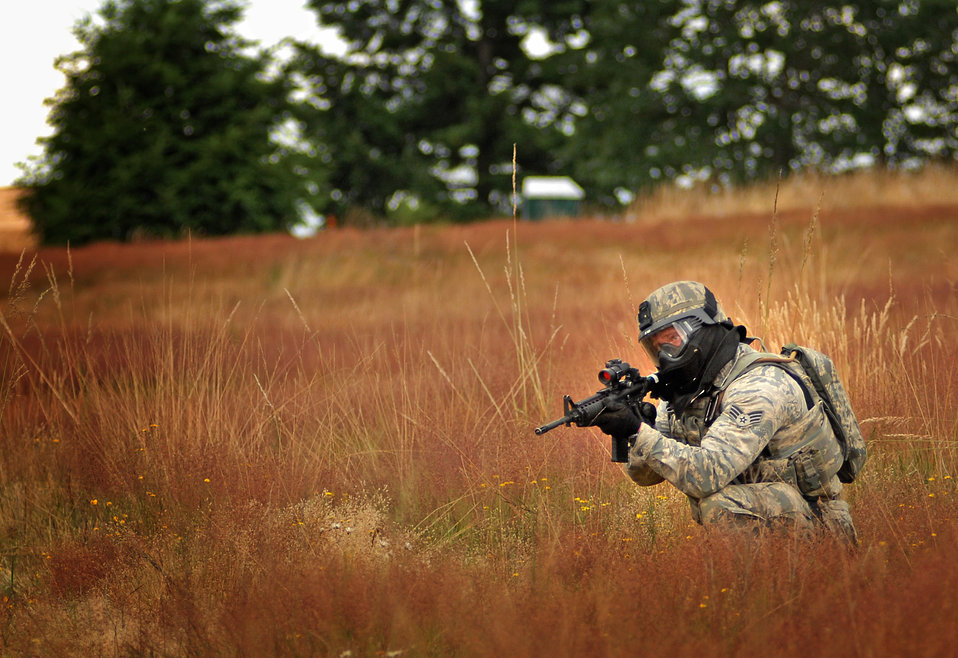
Combat Airman

Senior Airman Chris Menefee competes in a combat tactics event July 20, 2011, during the 2011 Air Mobility Rodeo at Joint Base Lewis-McChord, Wash. Menefee is assigned to the 647th Security Forces Squadron at Joint Base Pearl Harbor-Hickam, Hawaii.